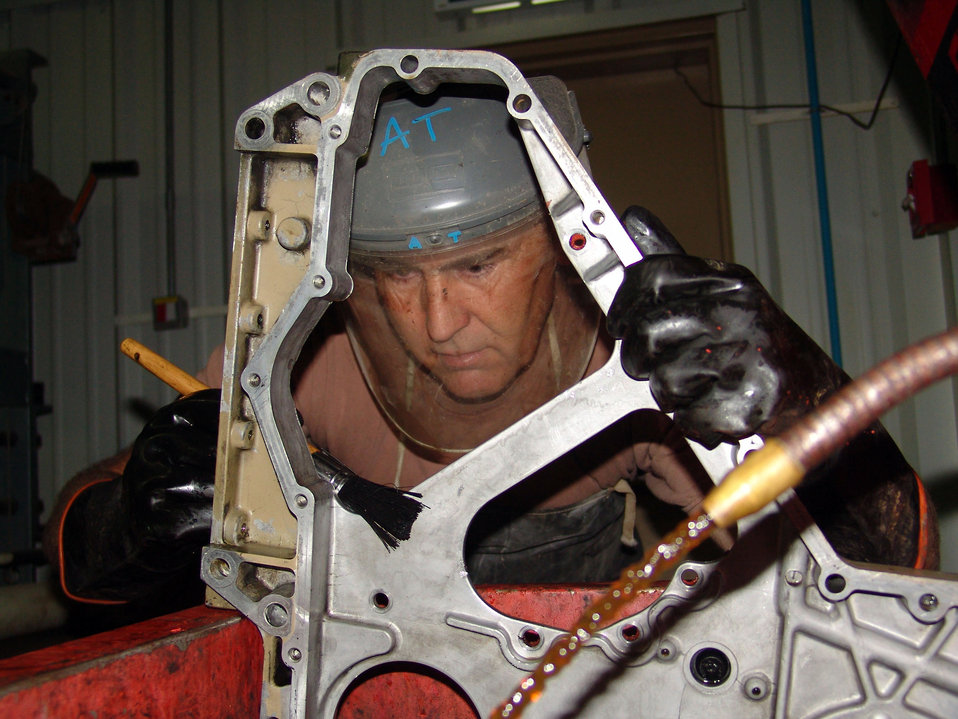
Desert duty

SOUTHWEST ASIA -- Staff Sgt. James Begley applies solvent to an engine component for a fuel truck. The solvent helps to dissolve and clean grime and gasket materials. Sergeant Begley is assigned to the 386th Expeditionary Logistics Readiness Squadron at a forward-deployed location and is in the Nevada Air National Guard.